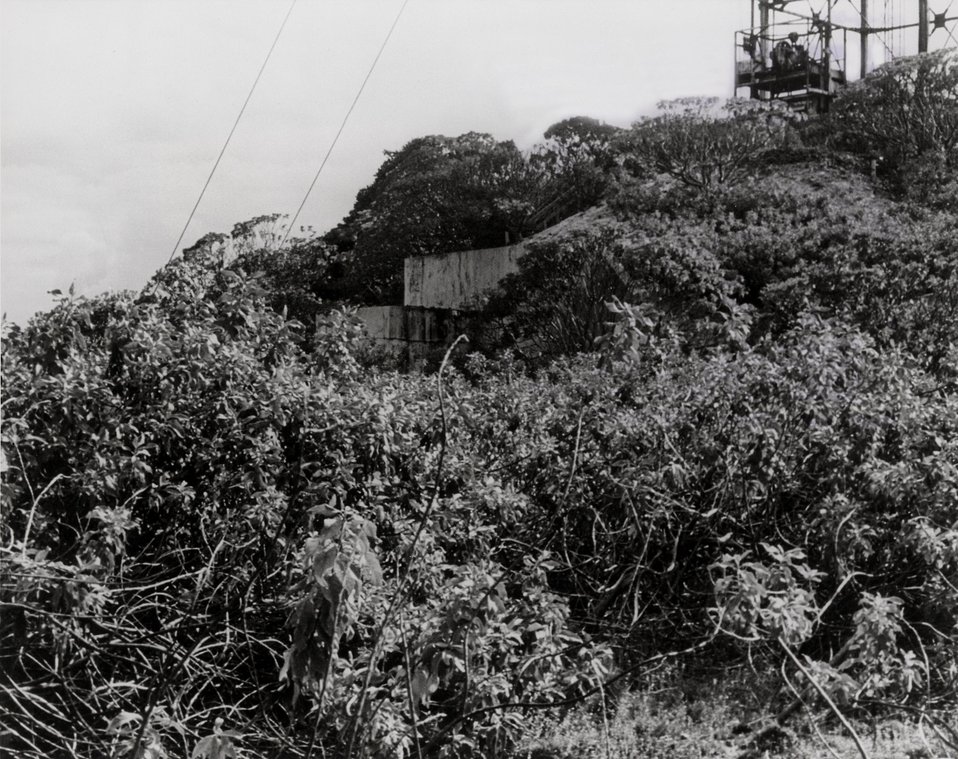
Bikini Atoll, ten years after nuclear testing natives allowed to return.